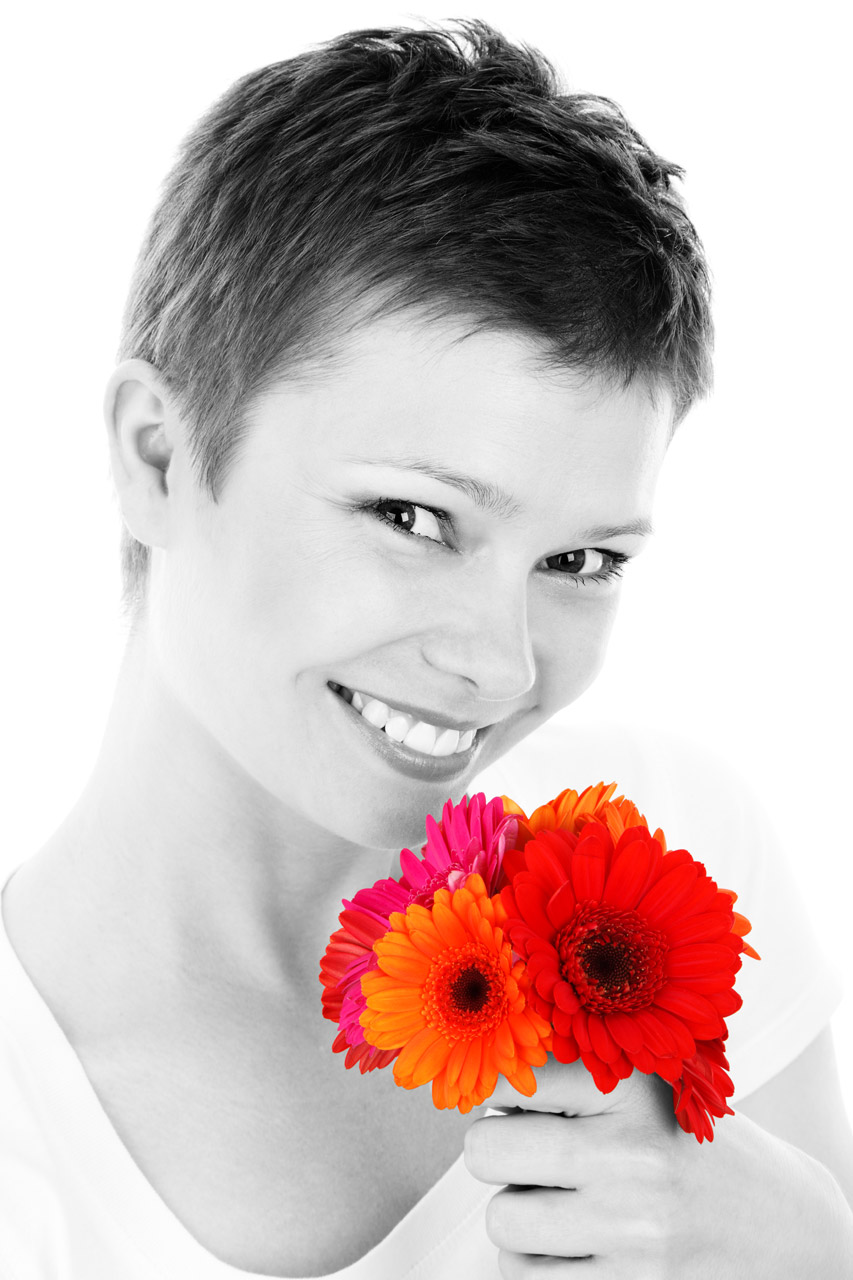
Woman portrait with flowers

Black and white portrait of a young woman smiling with colorful flowers in her hand isolated on white background.